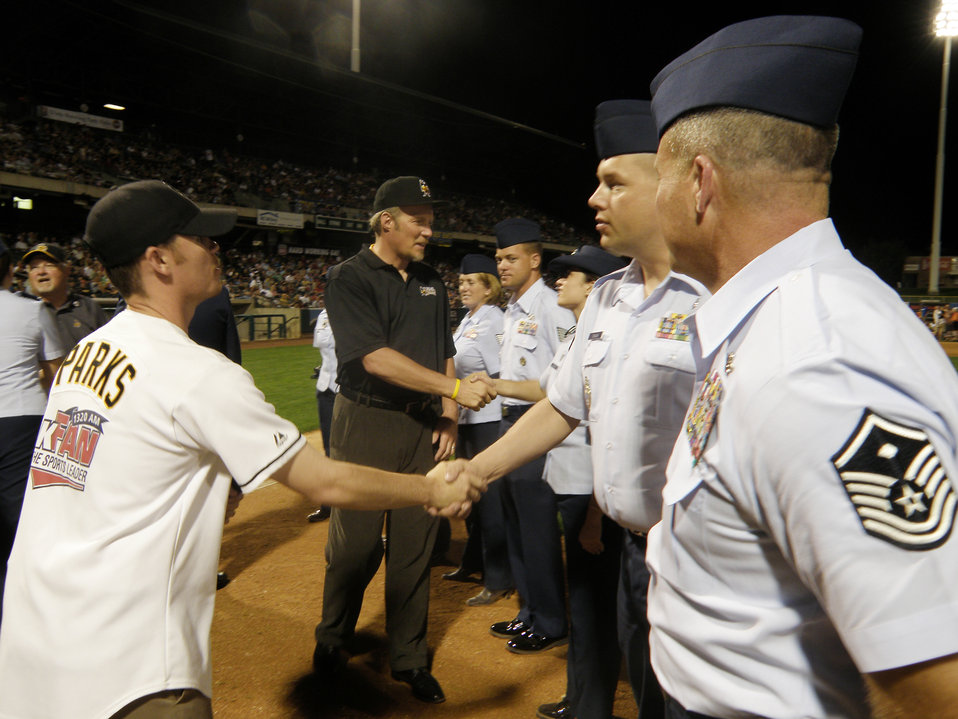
Baseball team wins 'American Spirit' Award

Tony Parks and Mr. Greg Miller (rear) of the Salt Lake Bees Triple-A baseball team, thank members of the 368th Recruiting Squadron for their service. The Bees were presented Air Force Recruiting Service's top civic award, the American Spirit Award, following the game Aug. 22, at Spring Mobile Park in Salt Lake City, Utah.